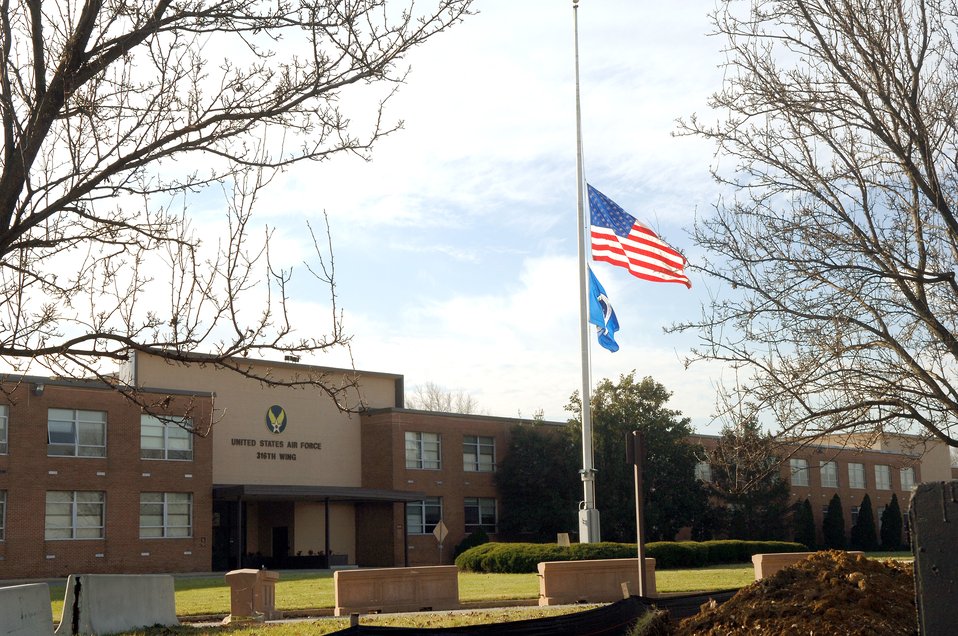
Ford remembrance

The U.S. flag flies at half-staff outside the 316th Wing at Andrews Air Force Base, Md., Dec. 29 in honor of former President Gerald R. Ford. President Ford died Dec. 26. The former president's body arrived at Andrews AFB Dec. 30 en route to his public funeral ceremony in Washington D.C.